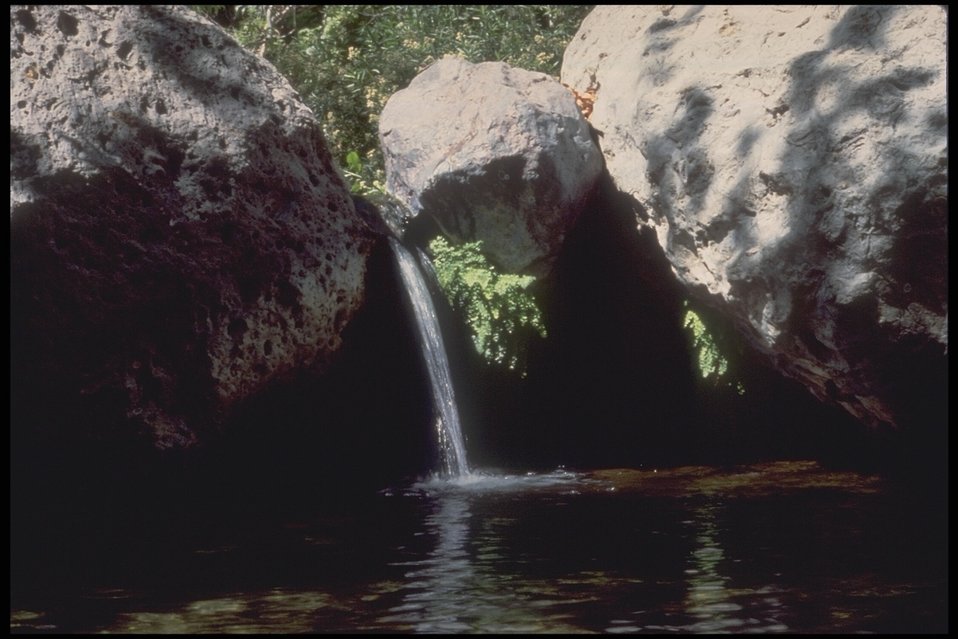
A small waterfall fills into a pool in the Arizona wilderness.